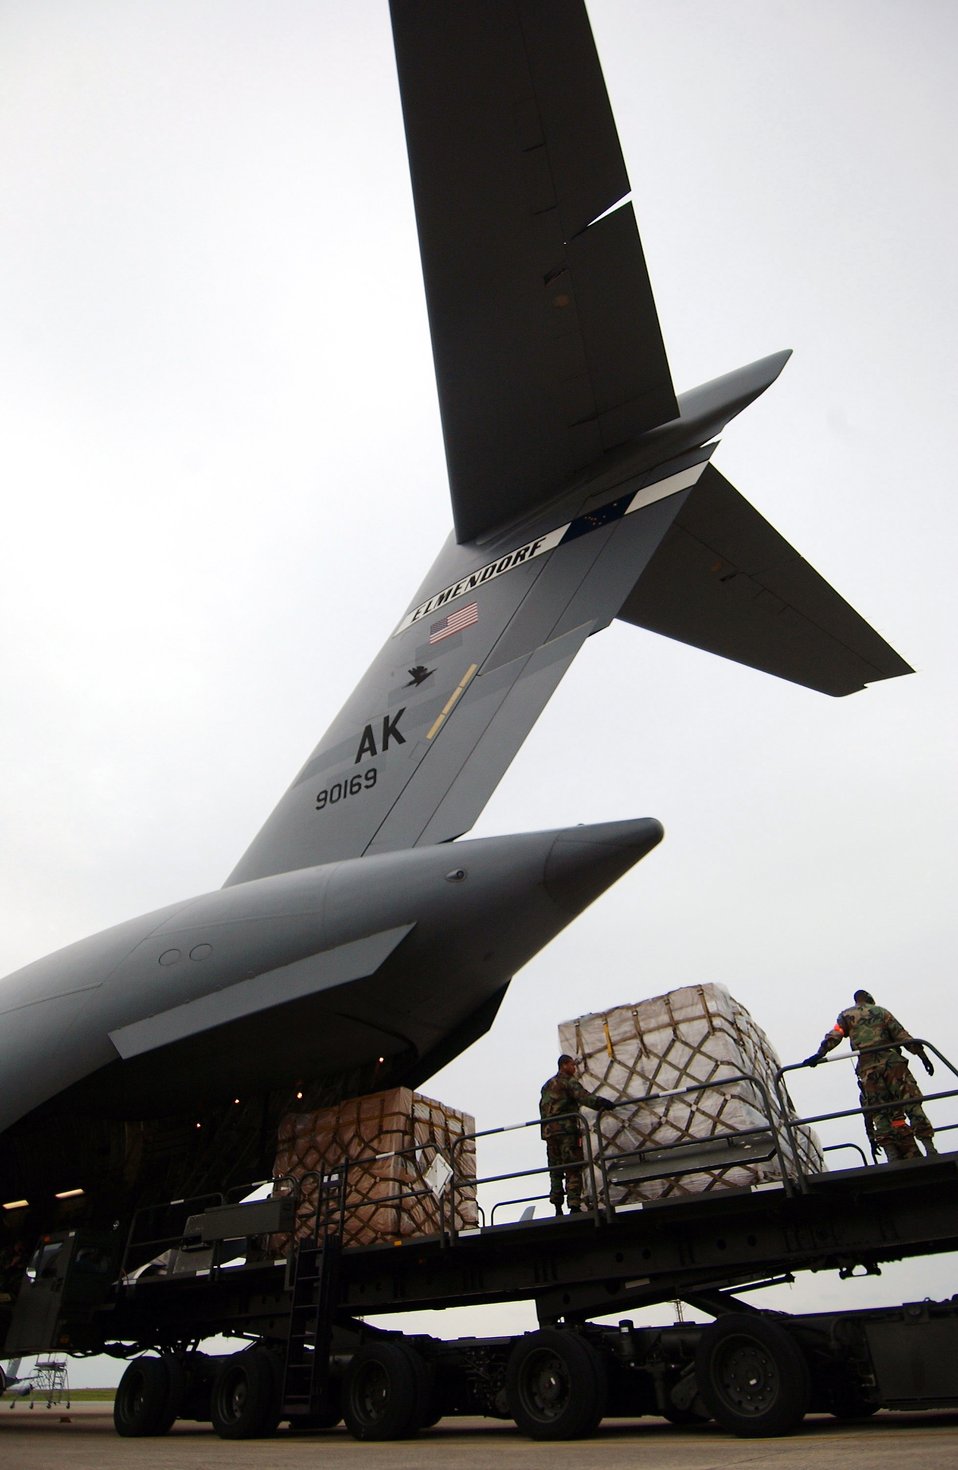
Airmen provide relief to China

Airmen from the 733rd Air Mobility Squadron load cargo onto a C-17 Globemaster III from Elmendorf Air Force Base, Alaska Feb. 8 at Kadena Air Base, Japan. The 733rd AMS loaded medical supplies, food rations and cold weather gear onto this C-17 and another from Hickam Air Force Base, Hawaii, bound for China. Recently, 19 Chinese provinces experienced the most severe winter storms in 50 years, imposing severe hardships on millions of Chinese citizens. U.S. Pacific Command coordinated the delivery of the humanitarian supplies to People's Liberation Army at Shanghai International Airport, China.